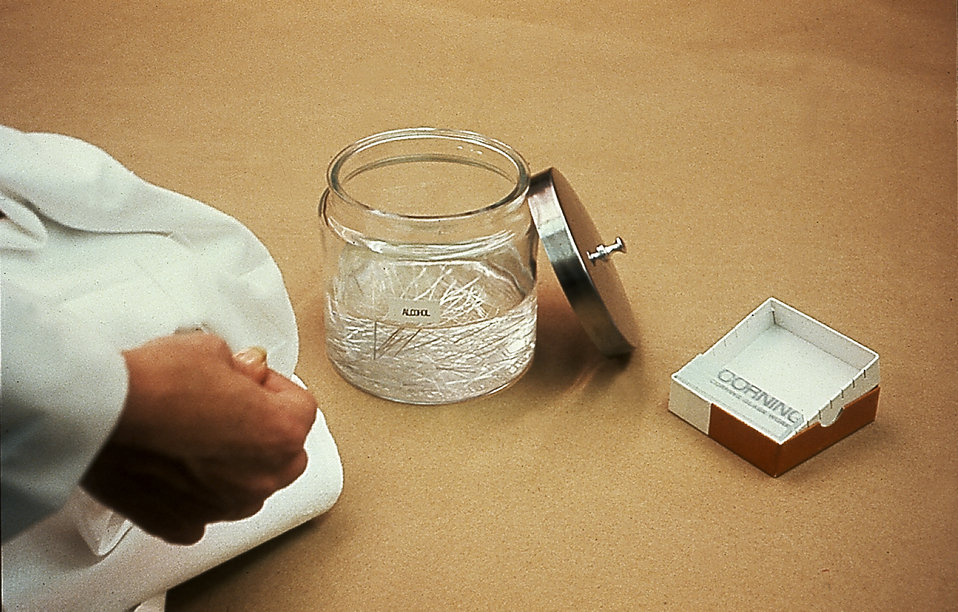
This parasitology lab technician is shown cleaning microscope slides with an alcohol solution.